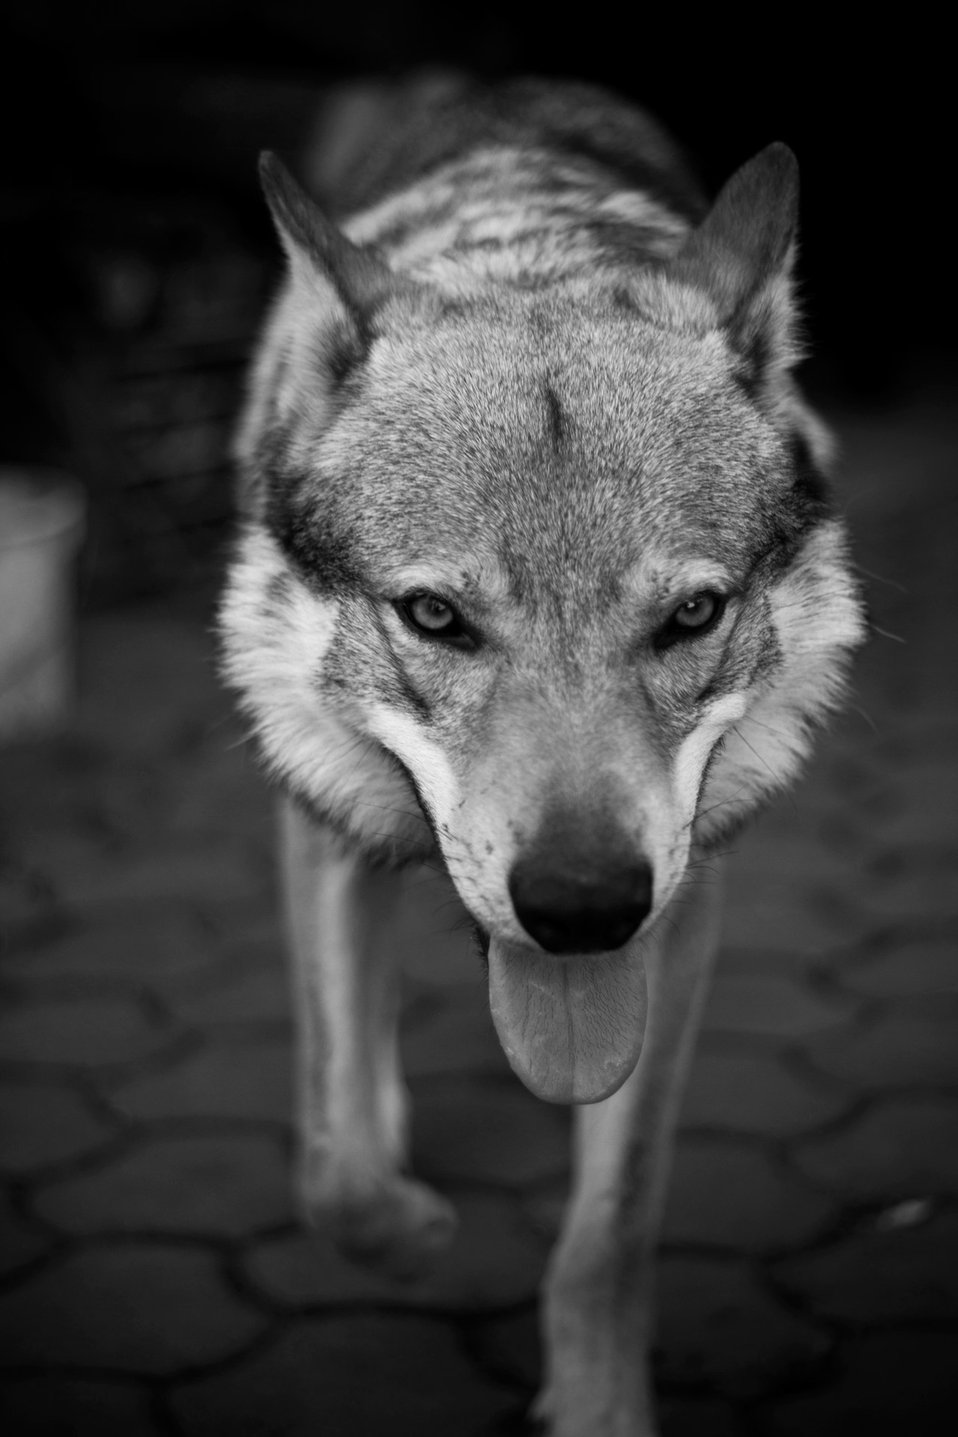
Dog black and white.